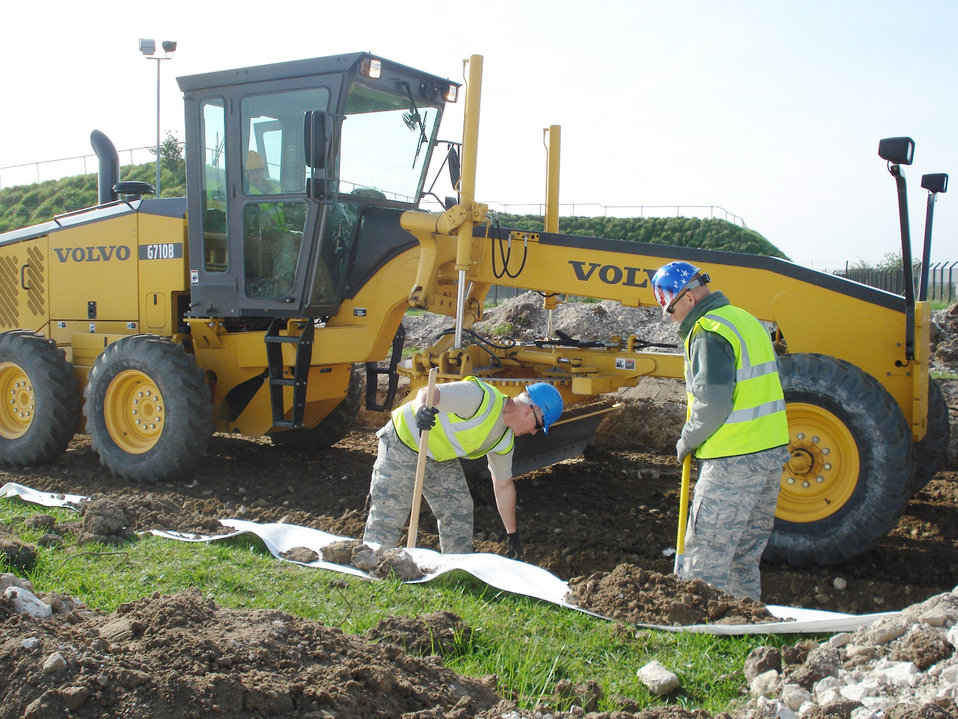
Civil engineers bring unique capability to USAFE

Tech. Sgt. Thomas Riggsbee, Staff Sgt. Raymond Stokes and Staff Sgt. Bobby Martin determine proper width of material during grading operations for a perimeter road in July at Royal Air Force Feltwell, England. Sergeant Riggsbee is the 86th Construction and Training Squadron's Military Construction Flight NCO in charge of structures, Sergeant Stokes is the 86th CTS/MCF NCO in charge of engineering, and Sergeant Martin is an 86th CTS/MCF pavements and equipment operator.